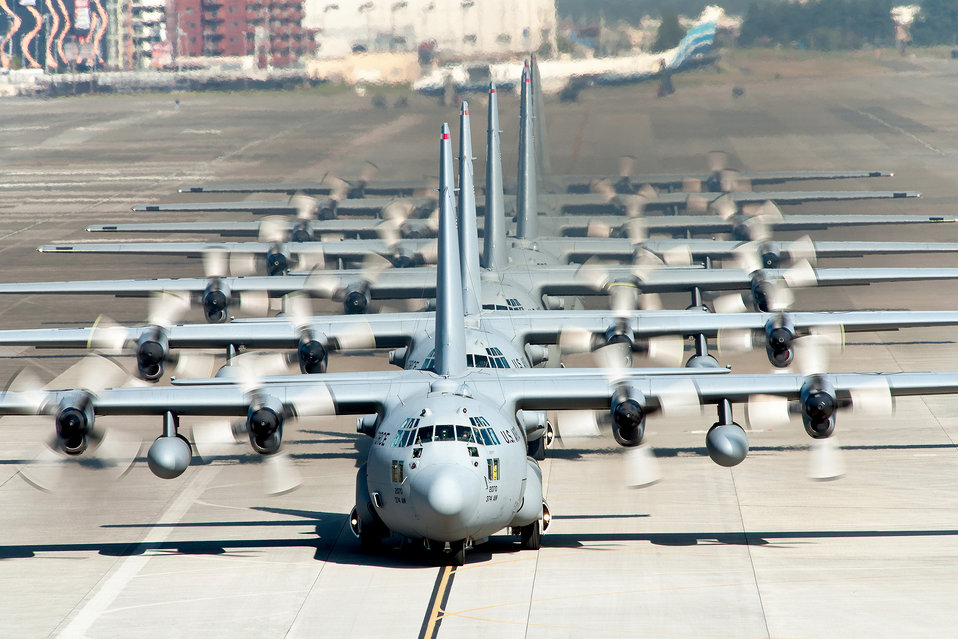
Tactical presence

A line of C-130 Hercules from the 36th Airlift Squadron taxi out for a mission during a seven-ship sortie Nov. 4, 2010, at Yokota Air Base, Japan. The sortie was part of the Samurai Surge exercise.